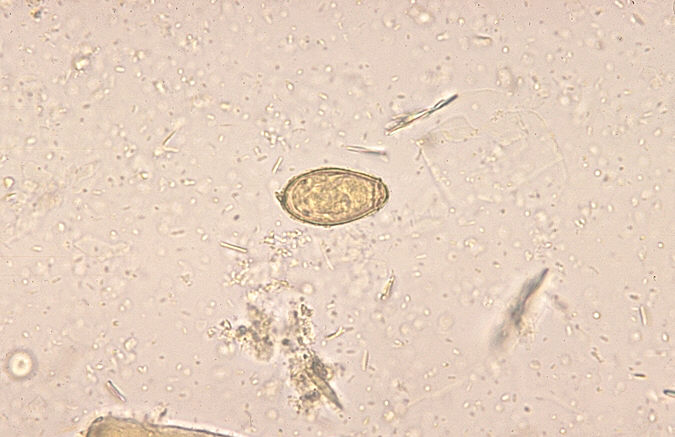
Clonorchis sinensis egg, unstained. Parasite.